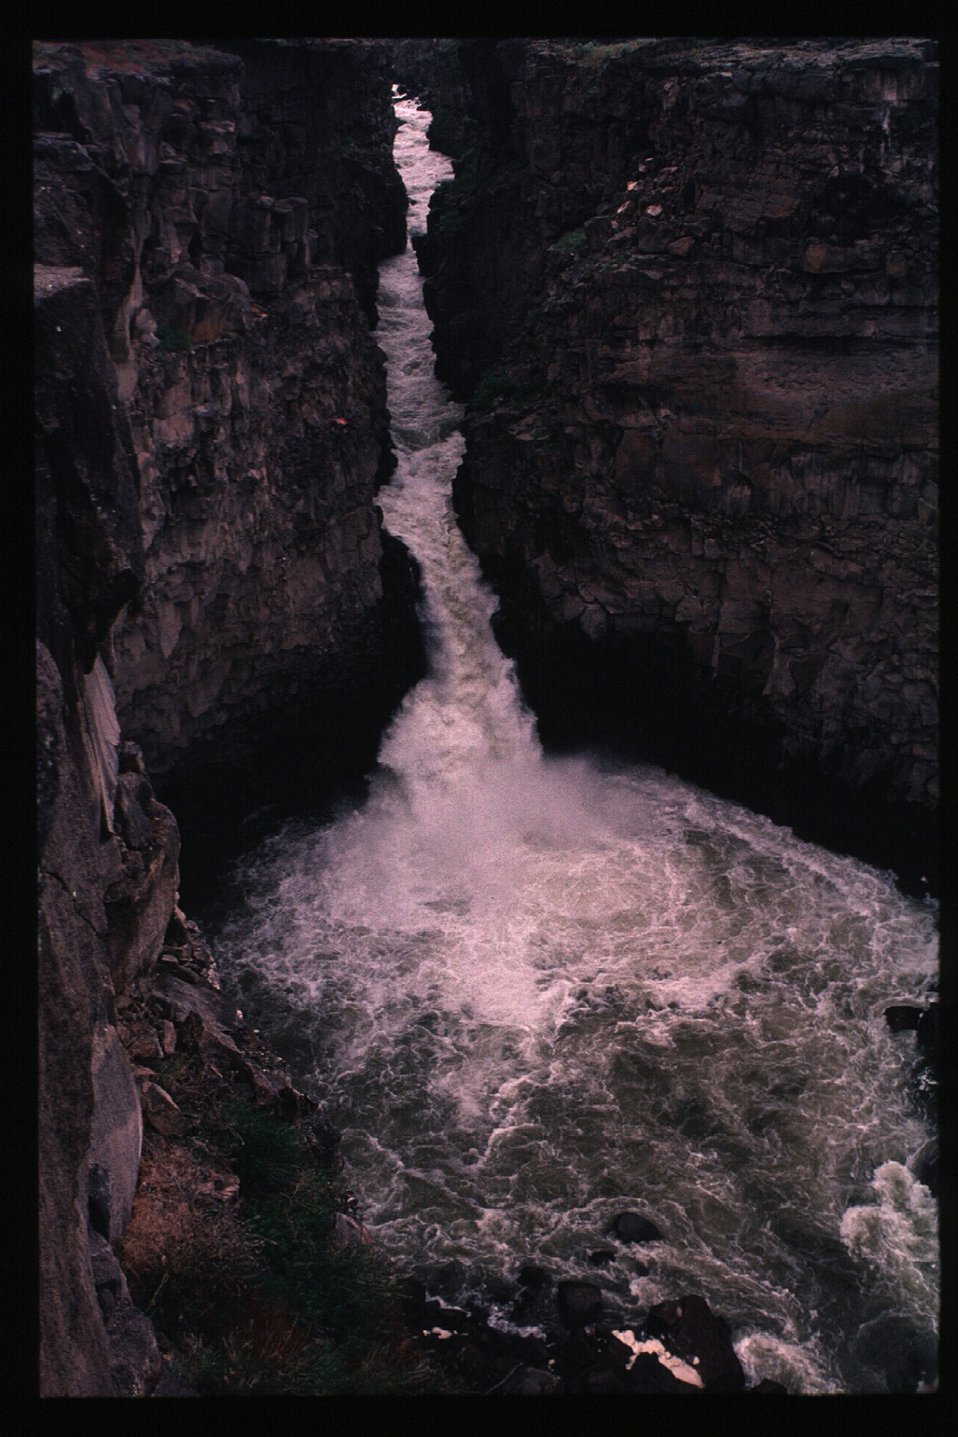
Water falls Rapids Recreation Scenic Snake River Jarbidge Field Office LSRD Lower Snake River District